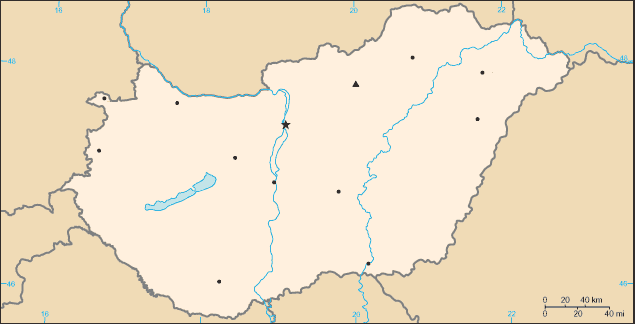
Blank map of Hungary.